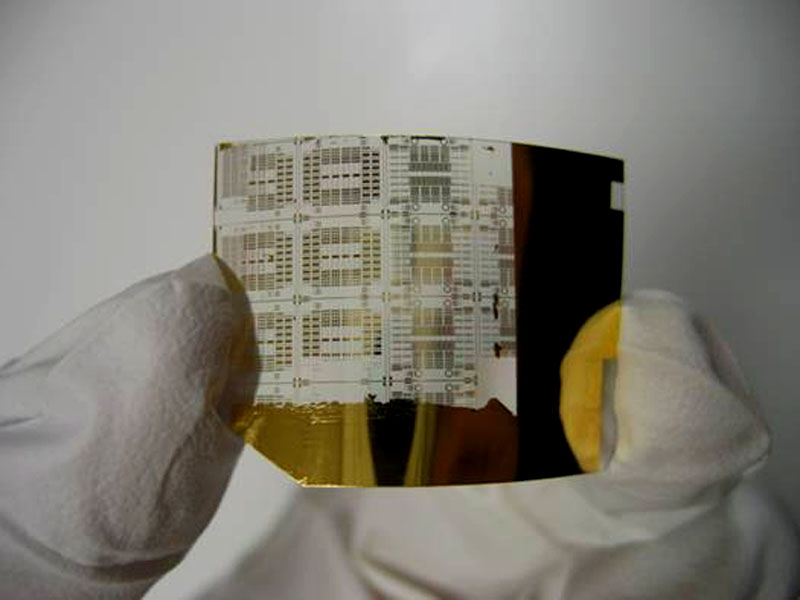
Scientist demonstrates record speed for bendable electronics

The flexibility of super-thin silicon transistors, such as the one pictured, could lead to electronics attached to unevenly shaped objects like airplane bodies or engines. Air Force Office of Scientific Research officials here recently have provided research funding for fast, bendable electronics to attach to unevenly shaped objects like airplane bodies or engines.